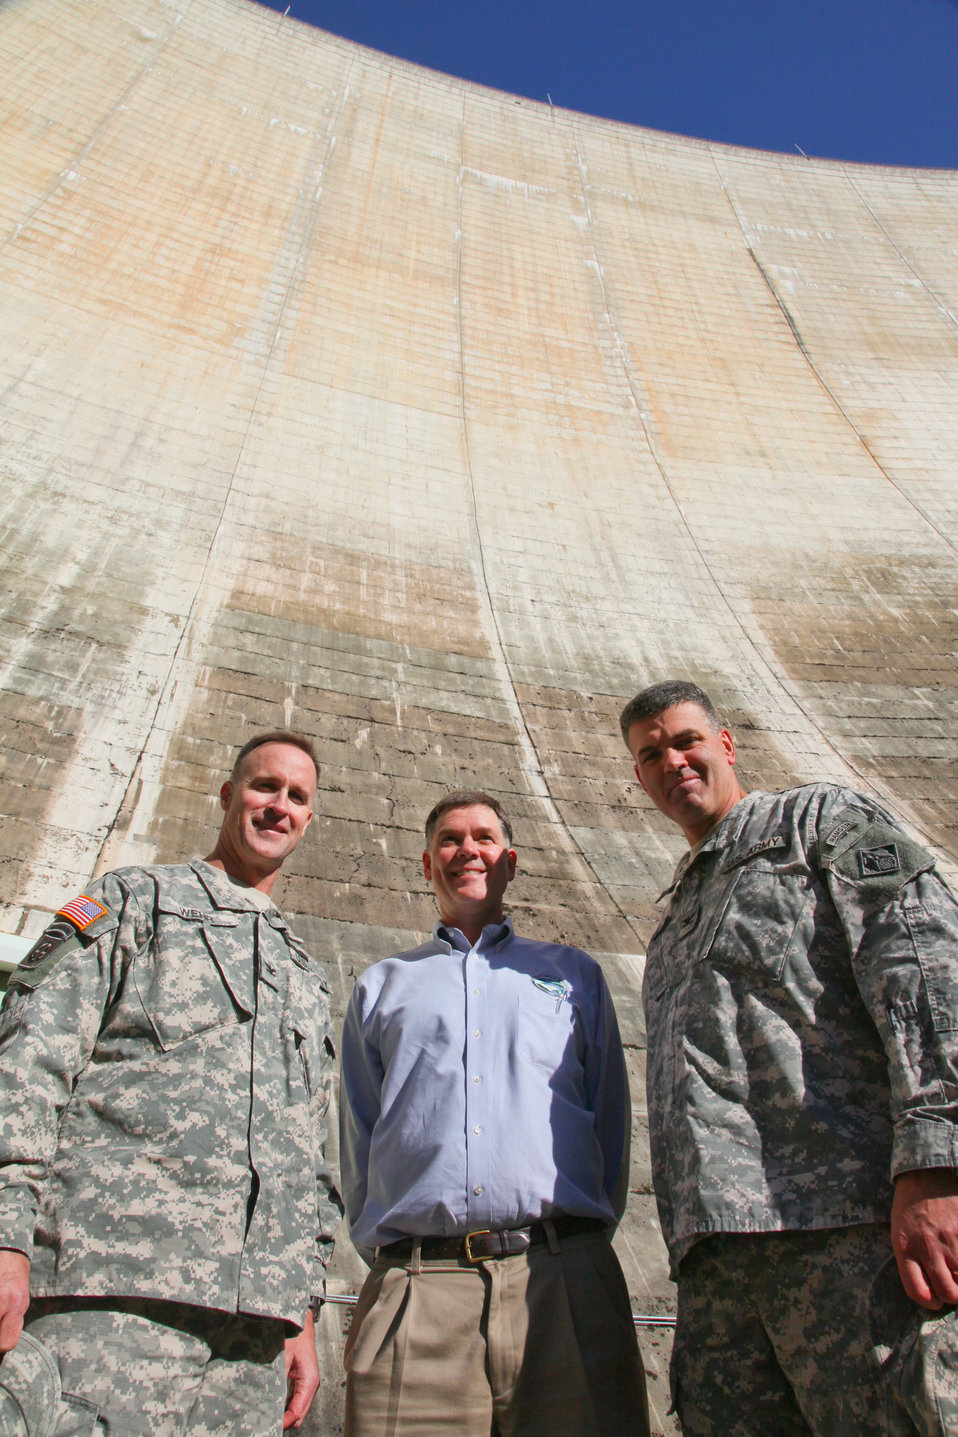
Corps takes a tour of the Yuba County Water Agency

(From left to right) U.S. Army Corps of Engineers South Pacific Division commander Col. Mike Wehr, Yuba County Water Agency general manager Curt Aikens and Sacramento District commander Col. Bill Leady pose for a photograph at the base of New Bullards Bar Dam on the north fork of the Yuba River outside Marysville, Calif., Dec. 9, 2011. Aikens provided a tour of the dam and New Bullards Bar Reservoir to the Corps officials, demonstrating the water agency’s existing and planned flood-risk reduction projects. The tour also included a visit to the agency’s water supply facilities, fishery enhancements, recreation and hydro-electric generation at Daguerre Point, Englebright and Bullards Bar Dams.